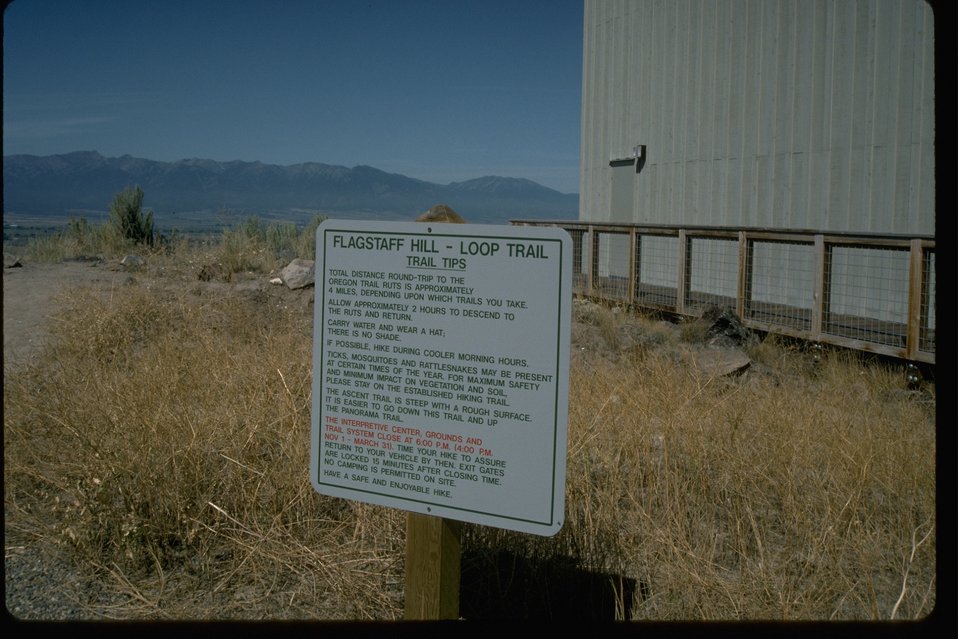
NHOTIC trail head sign.